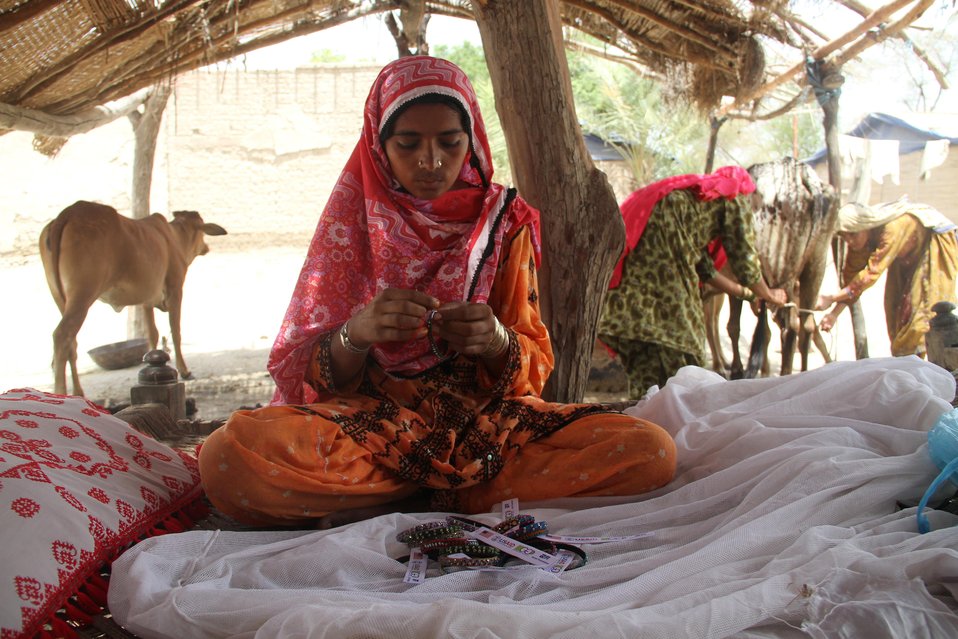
Womens' Economic Recovery Project District Kashmore Sindh

GENDER EQUITY PROGRAM